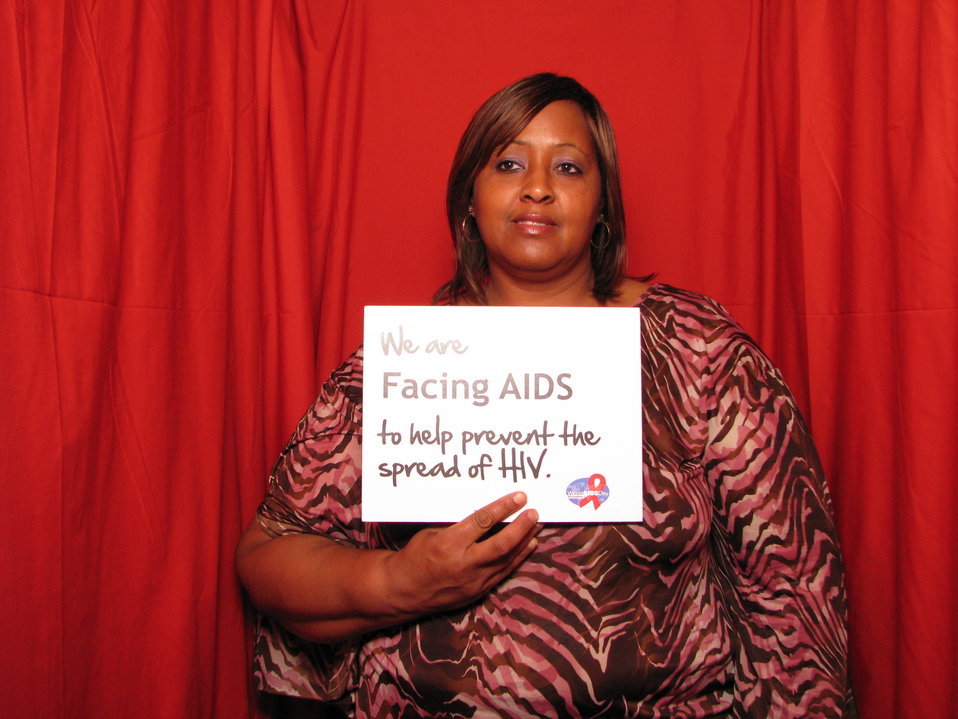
We are FACING AIDS to help prevent the spread of HIV.

From the AIDS.gov photo booth at the U.S. Conference on AIDS, September 2010 (Orlando, FL).